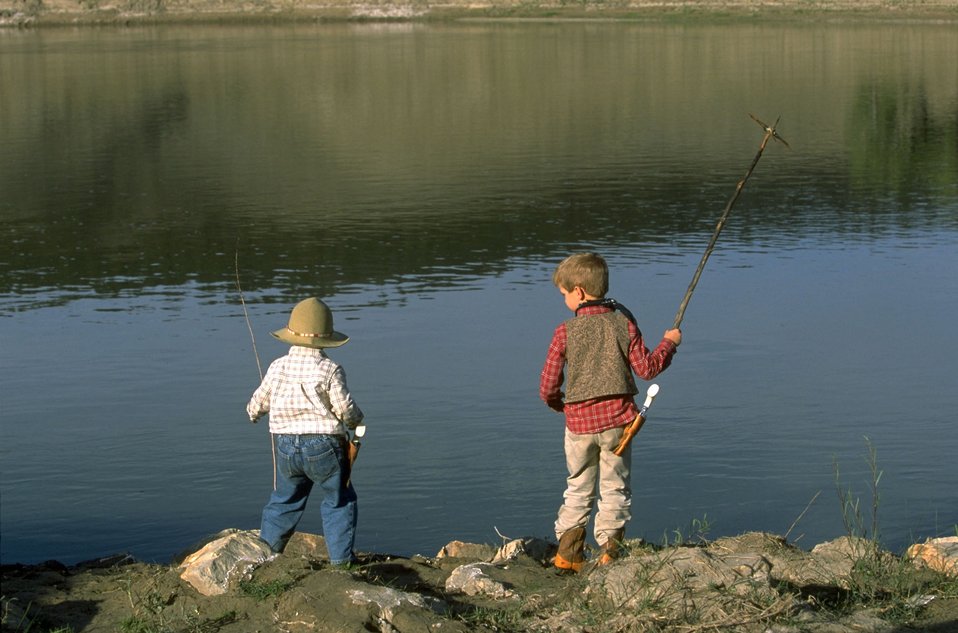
Children at Kipp Recreation Area